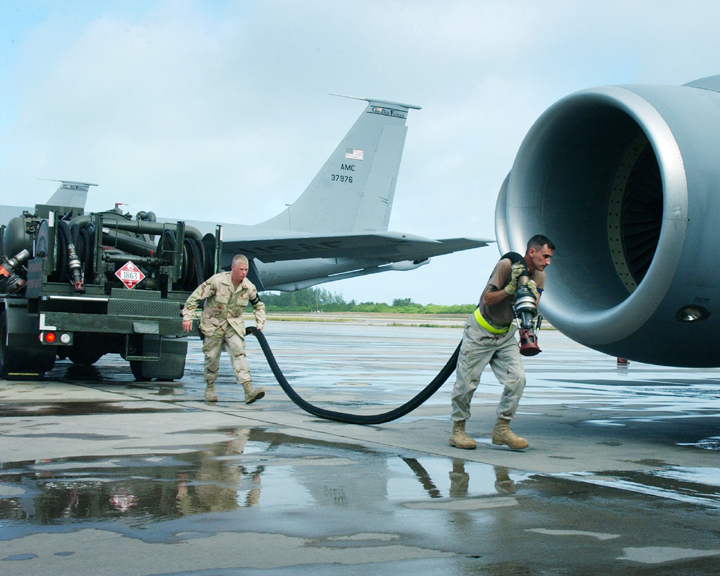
Fuels Airmen

OPERATION ENDURING FREEDOM -- Senior Airmen Michael Torbett (left) and Thomas Haefliger pull a servicing hose to refuel a KC-135 Stratotanker. The fuels element Airmen here have issued more than 10 million gallons of aviation fuel. Both Airmen are refueling unit operators with the 40th Expeditionary Logistics Readiness Flight fuels element. They are deployed from Fairchild Air Force Base, Wash.